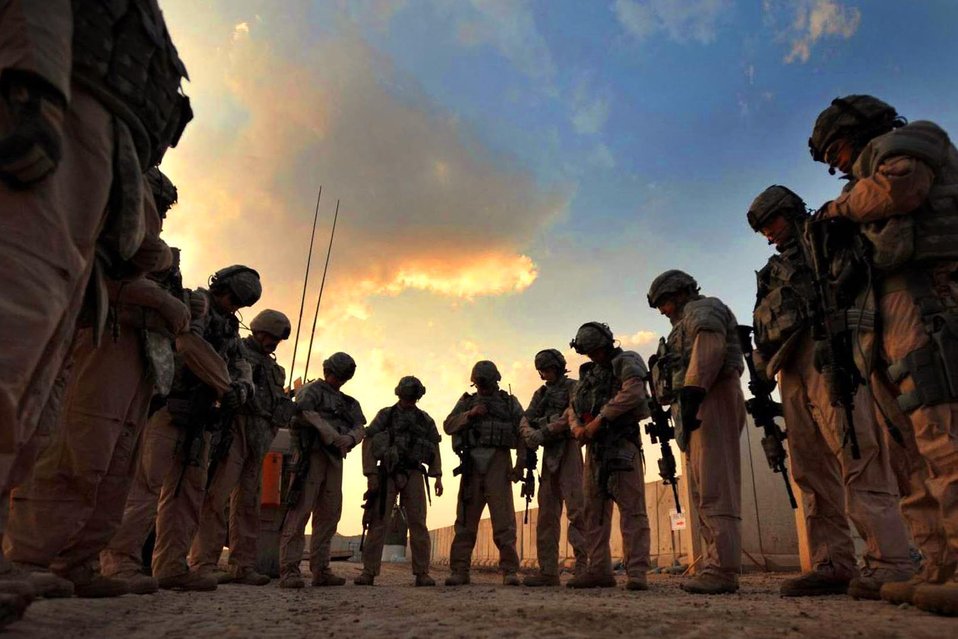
Solemn ritual

Airmen come together for a prayer Nov. 4 at Forward Operating Base Falcon near Baghdad, Iraq. The Airmen traditionally pray before heading out on their mission to police the Abu T'shir area of the city where they partner with the Iraqi police.